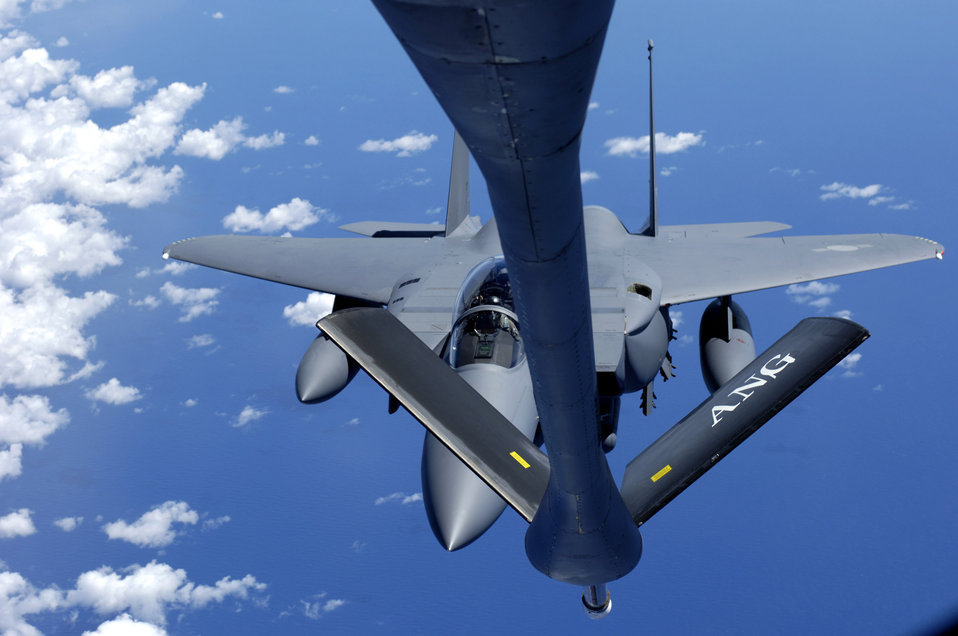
Fuel

OVER THE PACIFIC -- A South Korean F-15K Eagle comes in for fuel from a KC-135 Stratotanker Oct. 4. The next generation F-15s are on their way to South Korea to make their debut at the Seoul Air Show. The South Korea Air Force purchased 40 fighters from Boeing for $4.2 billon. The Stratotanker is from the Hawaii Air National Guard's 203rd Air Refueling Squadron.